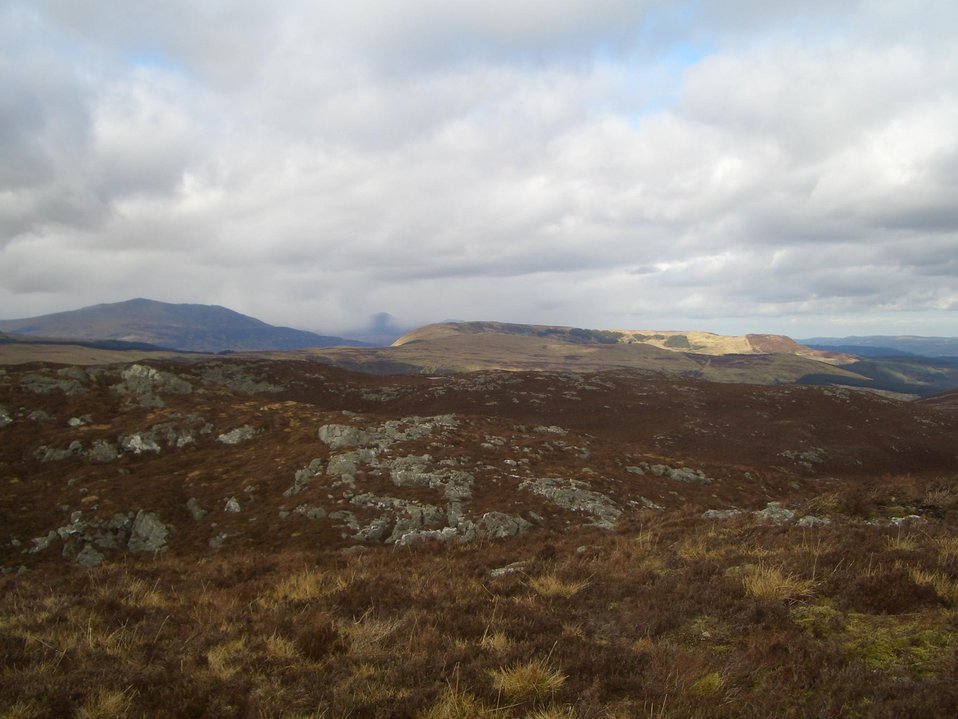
Moel Siabod (lef) and Y Ro Wen from Y Gamallt - Y Ro Wen is a mountain just north of Blaenau Ffestiniog, North Wales and forms part of the Moelwynion.